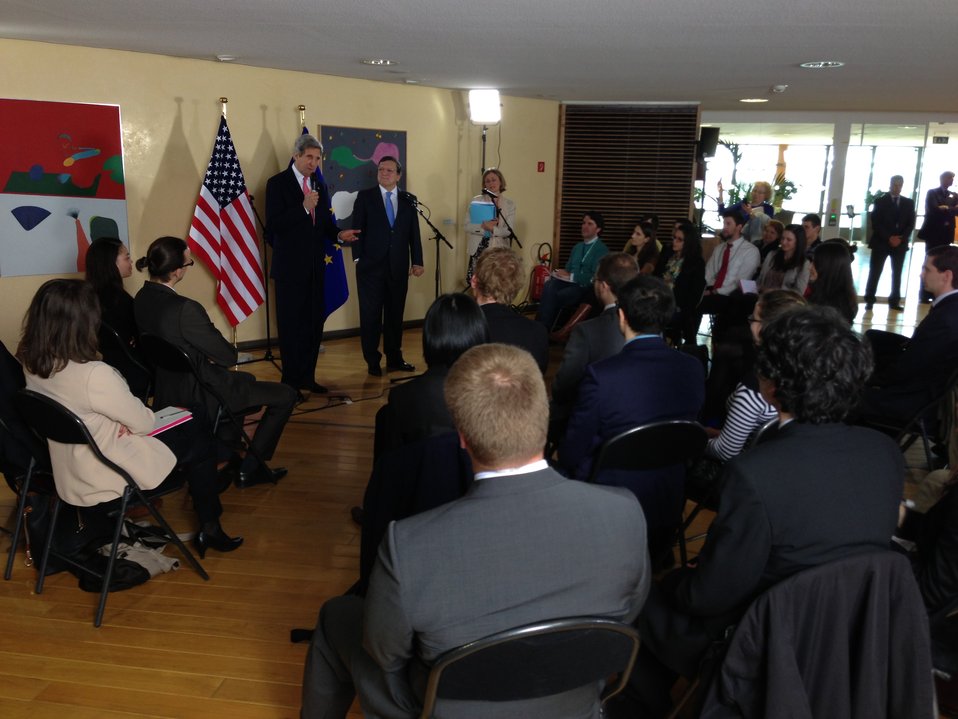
Secretary Kerry and President Barroso Speak to Youth

U.S. Secretary of State John Kerry and President of the European Commission Jose Manuel Barroso speak to a group of European Commission young fellows in Brussels, Belgium, April 22, 2013.